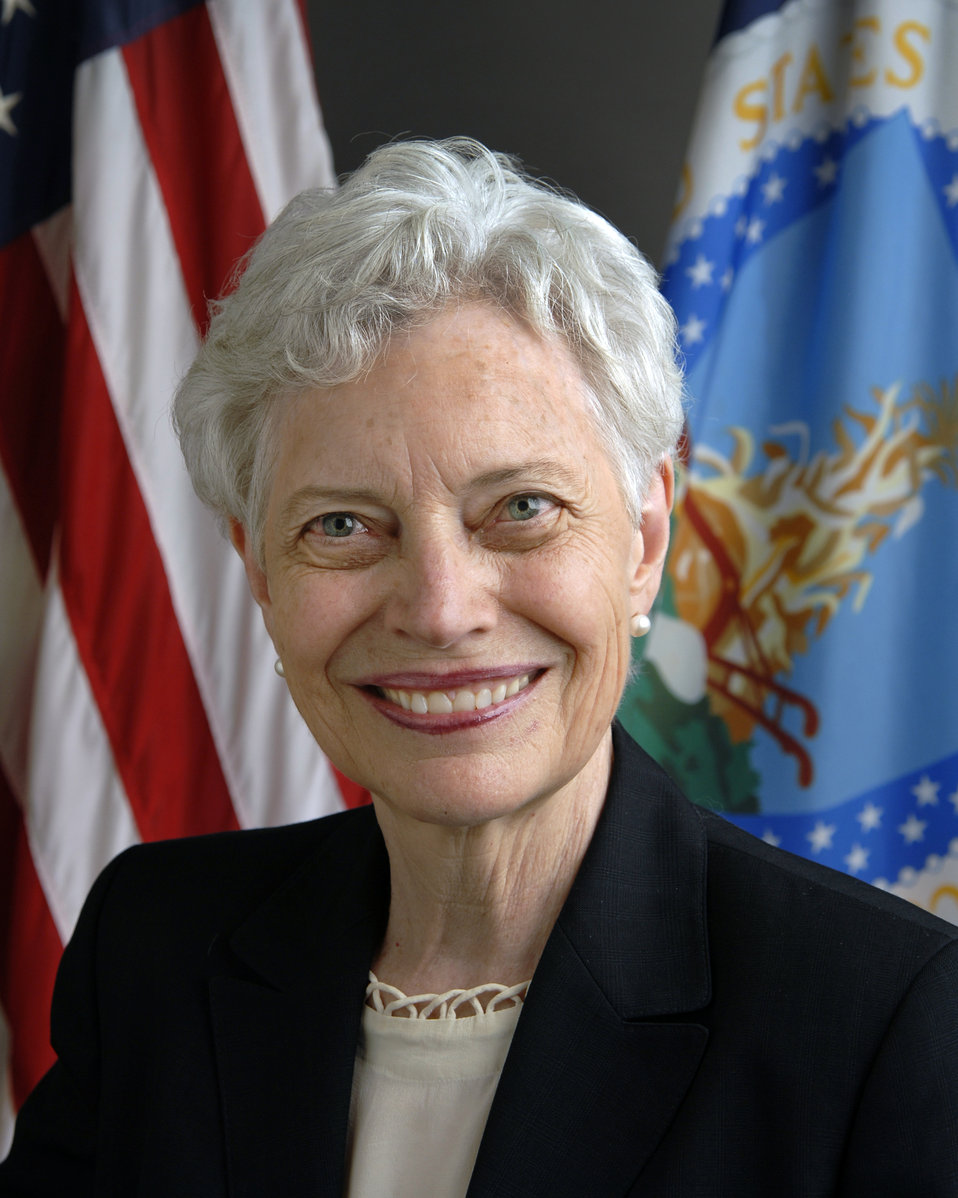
20120727-NASS-KJH-2784 Administrator National Agriculture Statistics Service Cynthia Clark

Portrait of Cynthia Clark, Administrator of NASS (National Agriculture Statistic Service).